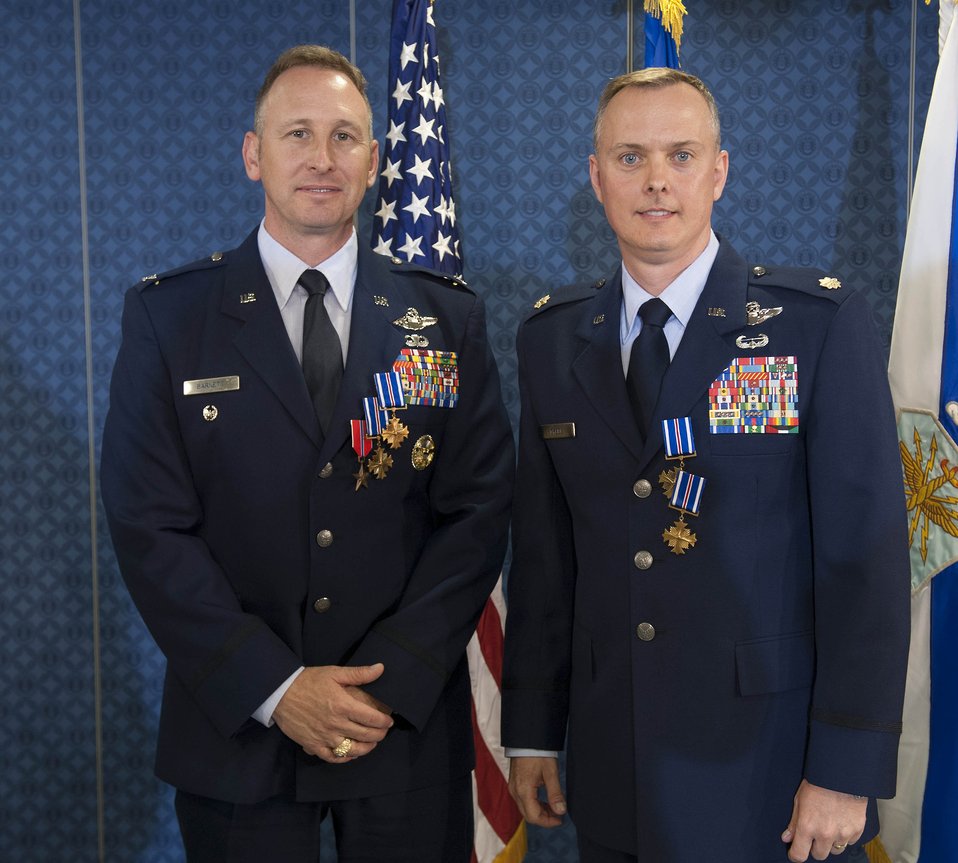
CSAF presents Distinguished Flying Cross

Air Force Chief of Staff Gen. Norton Schwartz presented two Distinguished Flying Cross with Valor medals and the Bronze Star to Col. Christopher Barnett (left), and two Distinguished Flying Cross with Valor medals to Maj. John Creel (right) during a ceremony in the Pentagon on May 18, 2012.